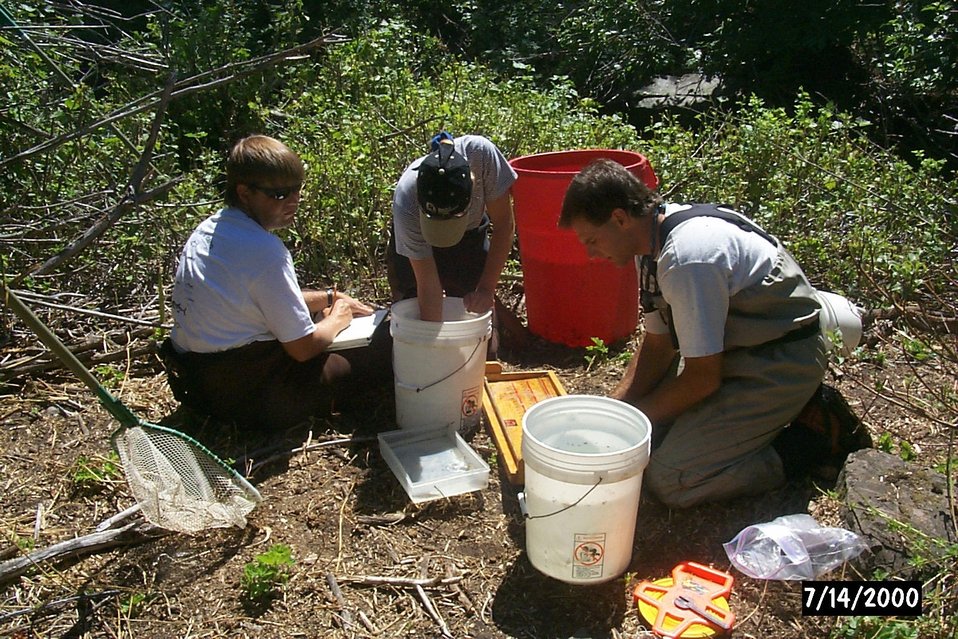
People Salmon Field Office UCSC Upper Columbia Salmon Clearwater District